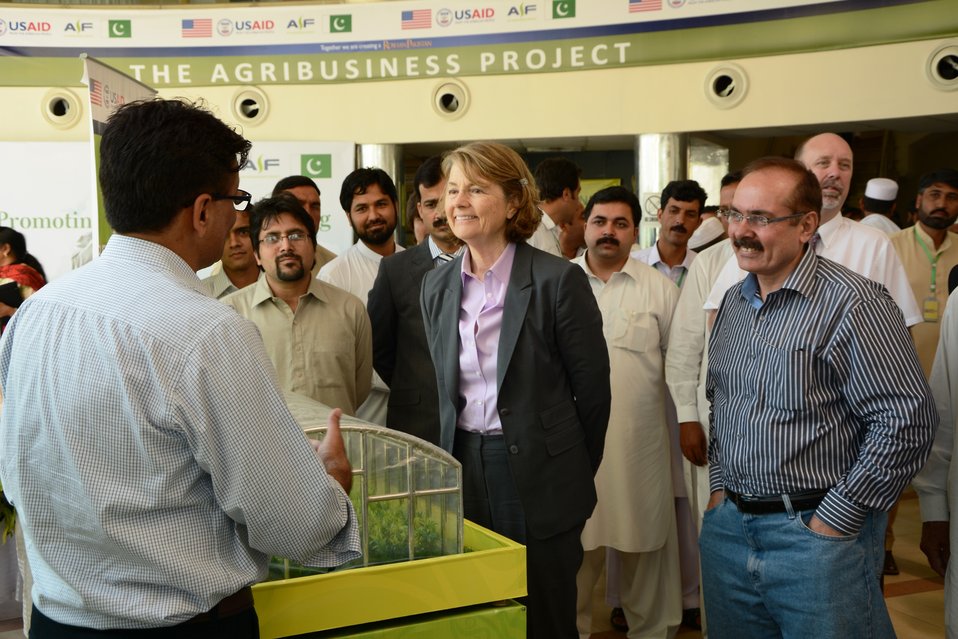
Picture (4) Pakistan vegetable Fair 2014 Islamabad May 15 2014